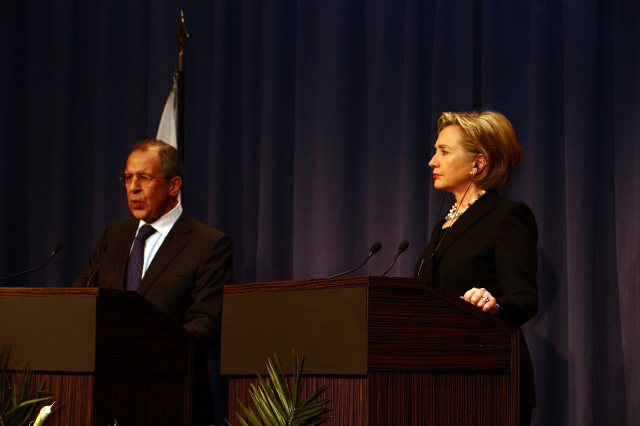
Press Conference With Russian Foreign Minister

Press conference after dinner meeting between U.S. Secretary of State Hillary Rodham Clinton and Russian Foreign Minister Sergey Lavrov in Geneva, Switzerland March 6, 2009.